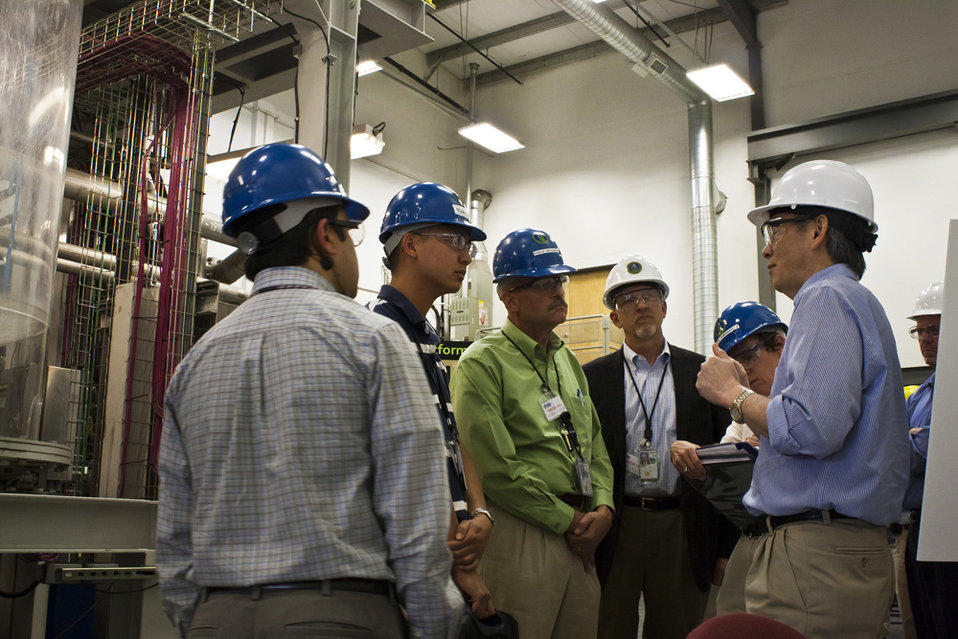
SECRETARY CHU AT HANFORD LSIT 2012

DOE Secretary Chu tours the Low-Scale Integrated Testing Facility (LSIT) at Hanford on July 14, 2012.